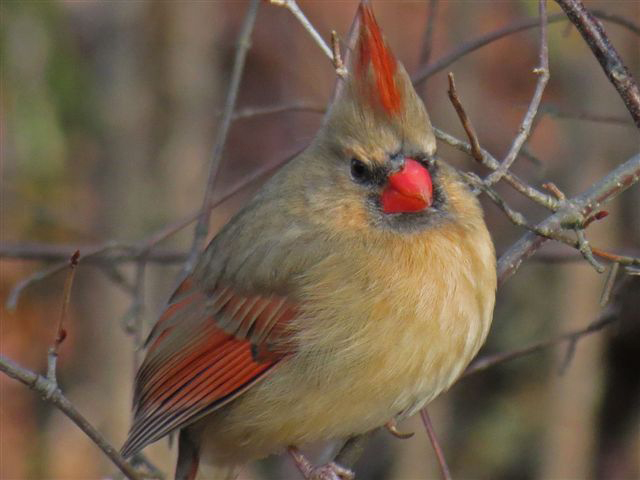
Photo of the Week - Female Cardinal (RI)

Photo of the Week - 1/23/12

Female Northern Cardinal at Trustom Pond National Wildlife Refuge.